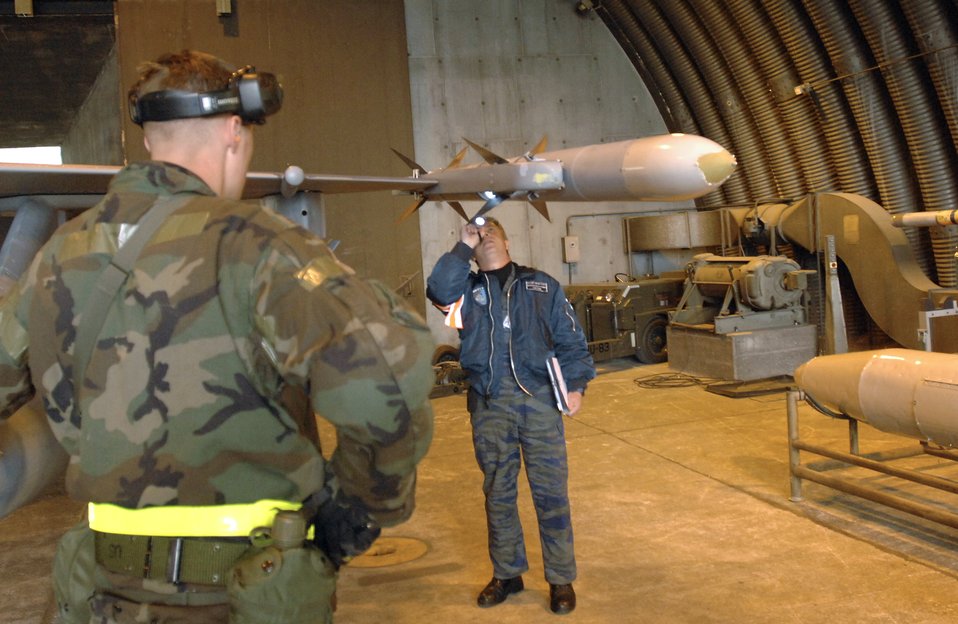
Bring on the evaluators, we're ready!

A NATO evaluator inspects a missile after it was loaded onto an F-16 March 8 during a NATO Tactical Evaluation at Aviano Air Base, Italy. The evaluation is to determine if Aviano's 31st Fighter Wing is prepared to support NATO Response Force 9/10.